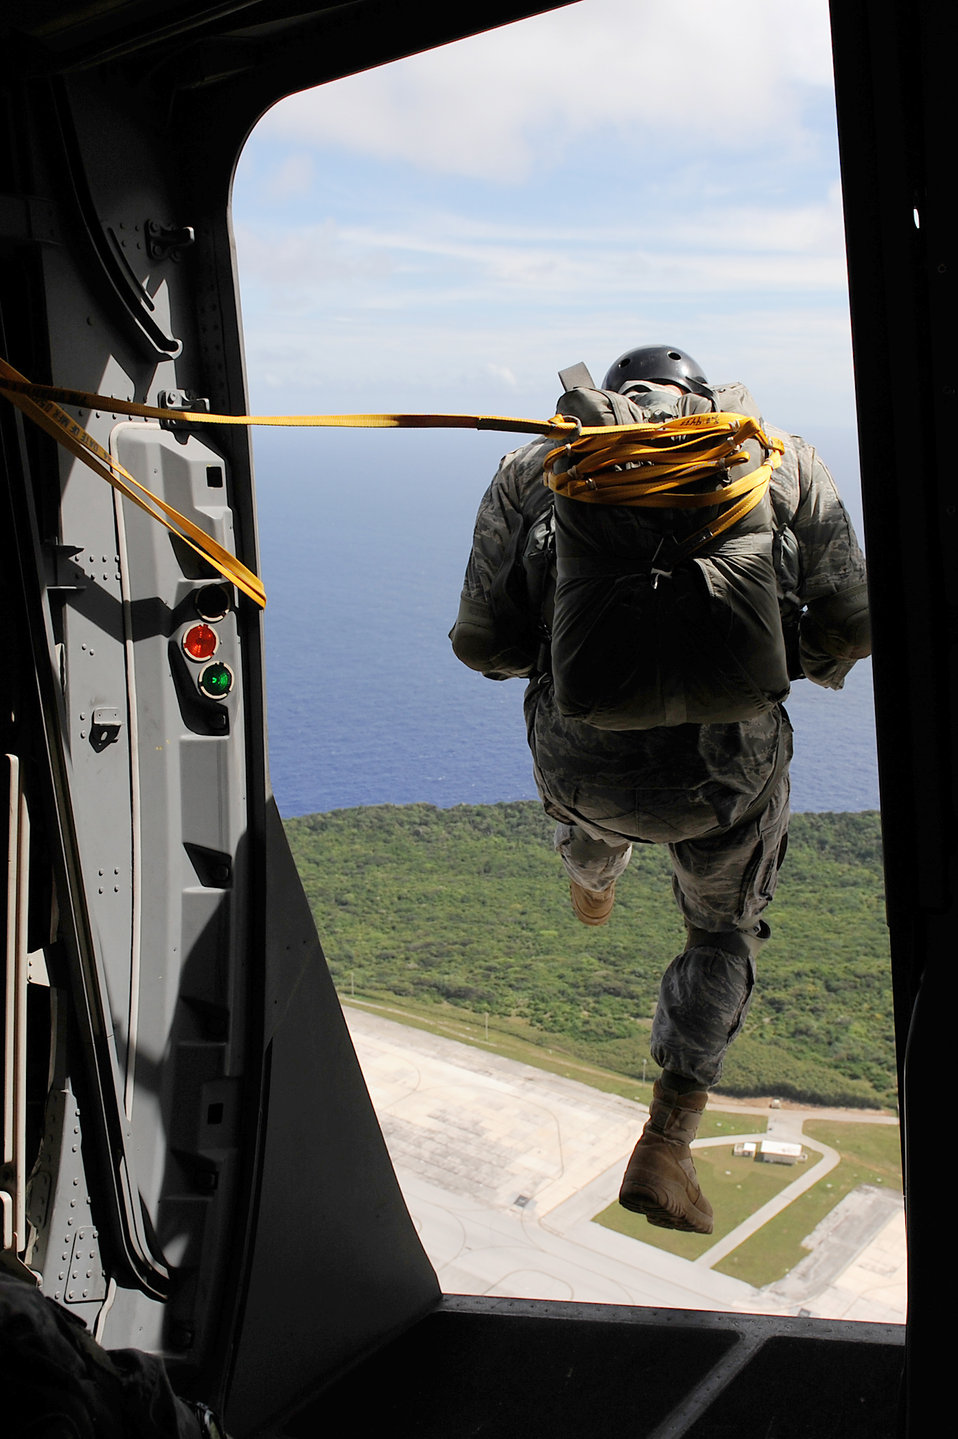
Static-line jumps over Guam

An Airman from the 36th Contingency Response Group jumps out a C-17 Globemaster III over the Andersen Air Force Base, Guam, drop zone Jan. 13, 2011, during static-line jump training. The Globemaster is assigned to the 535th Airlift Squadron from Joint Base Pearl Harbor-Hickam, Hawaii.